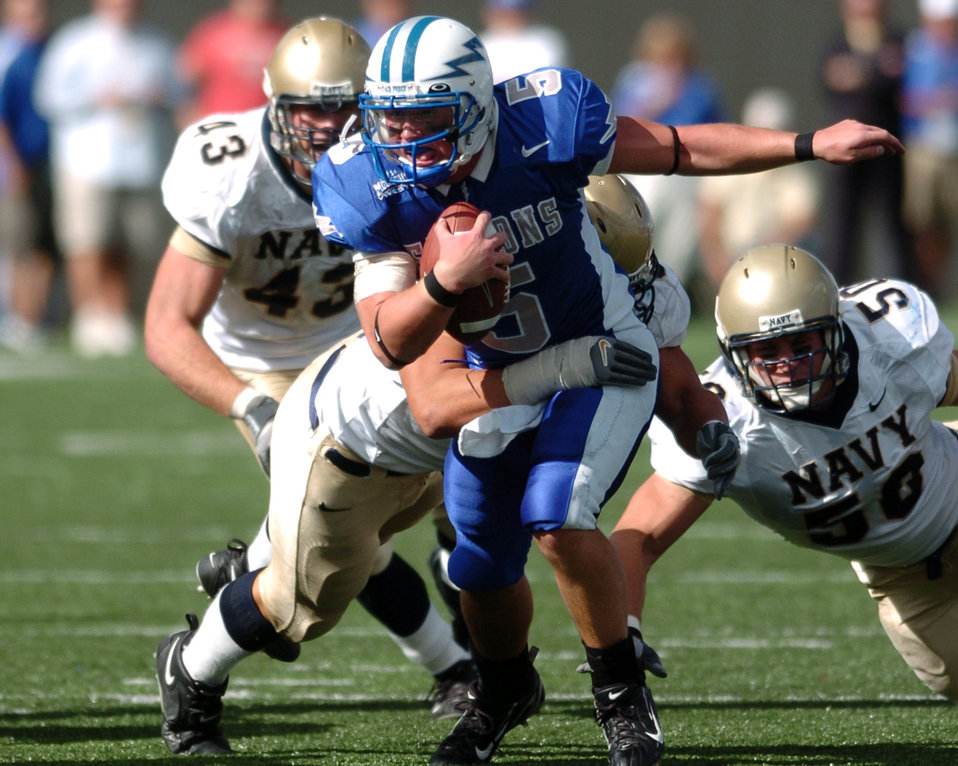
Running for daylight

Air Force quarterback Shaun Carney breaks through Navy tacklers Oct. 7 to avoid being sacked. Carney rushed for 57 of the Falcons' 193 total yards on the ground. Navy won, 24-17.